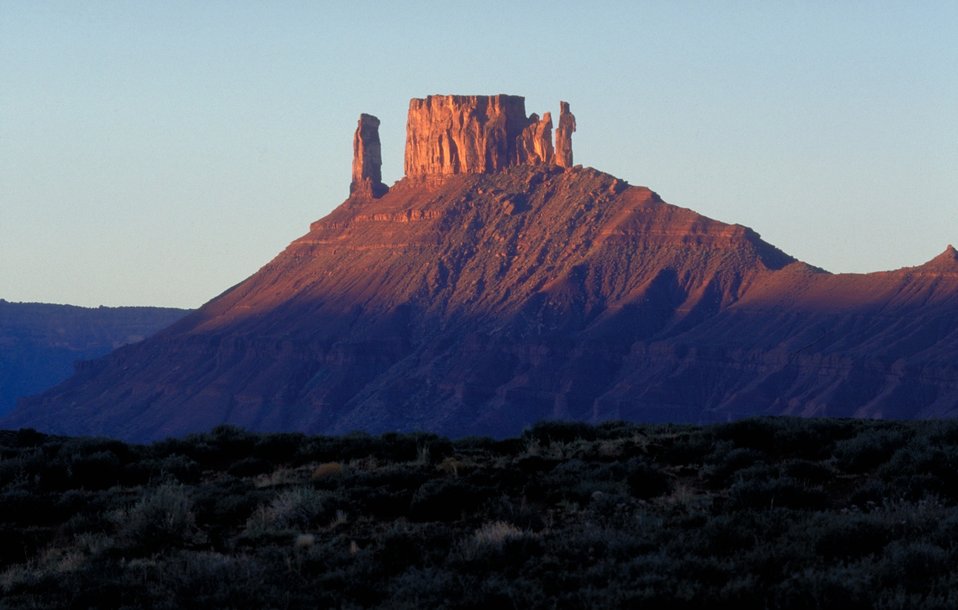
Priest and Nuns along Highway 128 near Moab, Utah.